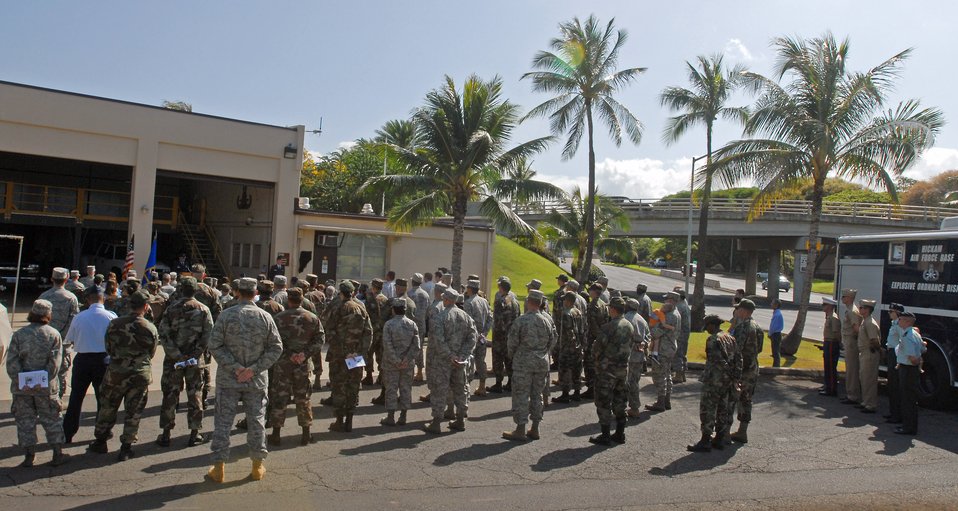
EOD facility at Hickam named in honor of fallen Airman

Family, friends and fellow servicemembers pay respect during a dedication ceremony in memory of Senior Airman William Newman June 7 at the 15th Civil Engineer Squadron Explosive Ordnance facility at Hickam Air Force Base, Hawaii. The tribute was in honor of Airmen Newman for giving his life to protect the people of Iraq and the lives of the Soldiers and Airmen operating with him on his last mission June 7, 2007.